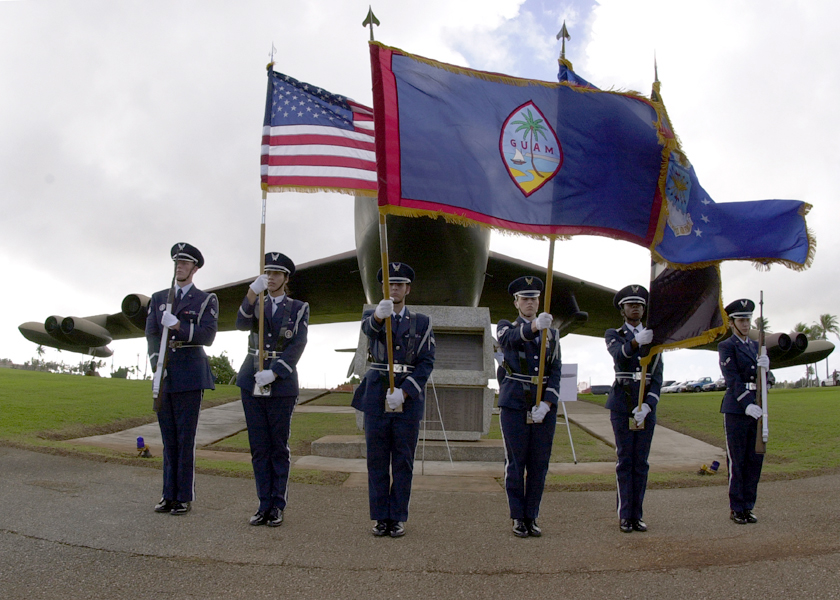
Honoring fallen airmen

ANDERSEN AIR FORCE BASE, Guam -- Airmen of the Andersen Blue Knights Honor Guard present the flags while